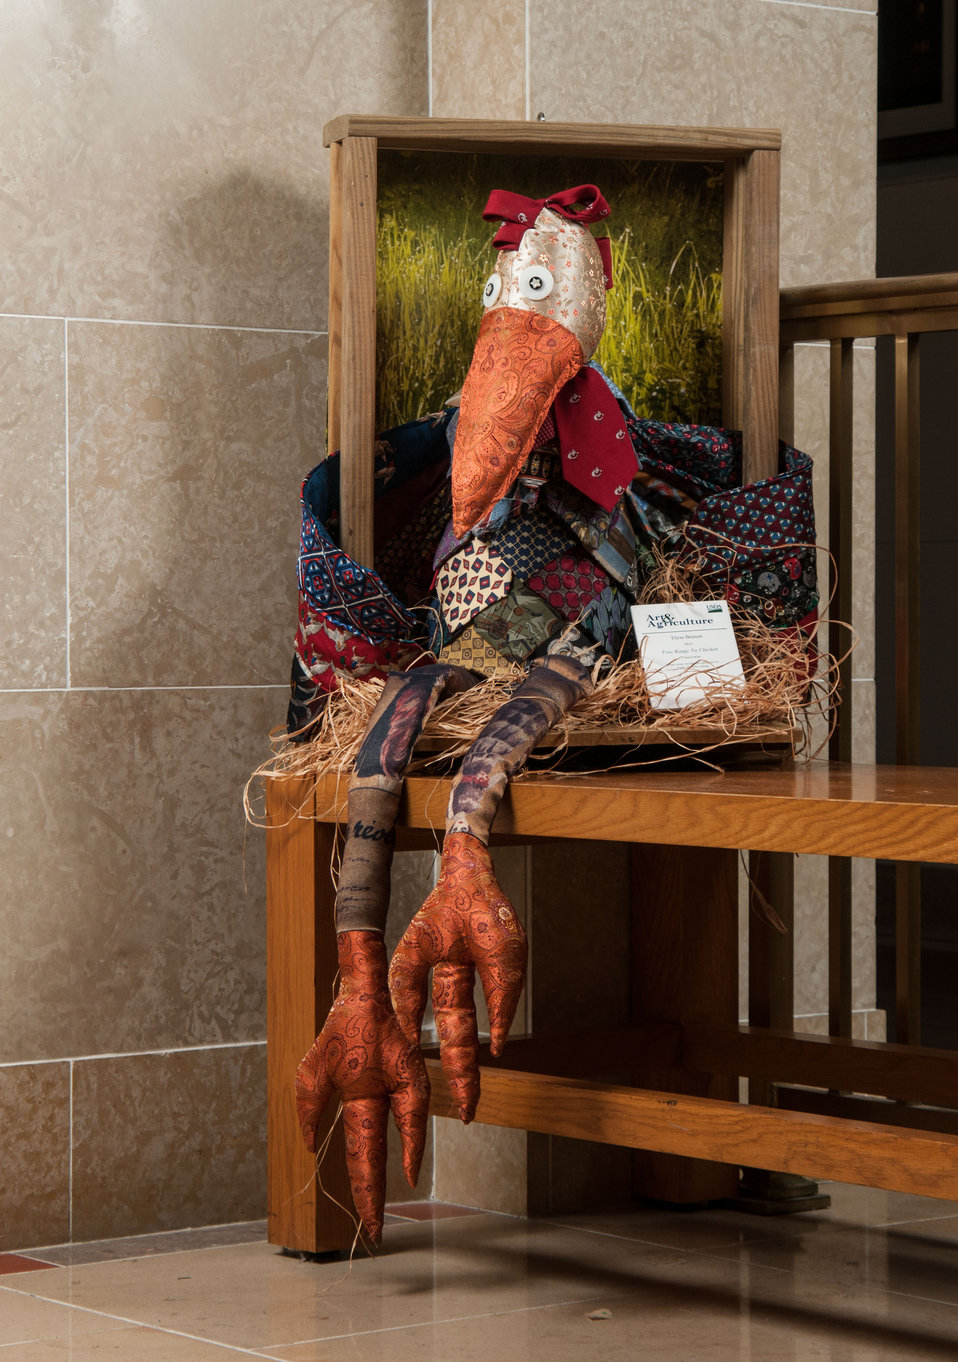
Online Viewer's Choice entries of the 2013 Art & Agriculture, Tuesday, July 9, 2013, in the South Building, Washington, D.C. Themes were expressed by employees from across the department and the contest was open to full-time and part-time USDA employees. Winning artwork will be displayed till the end of the year. U.S. Artistic expression is a creative outlet that is vital for an individual to grow and develop.